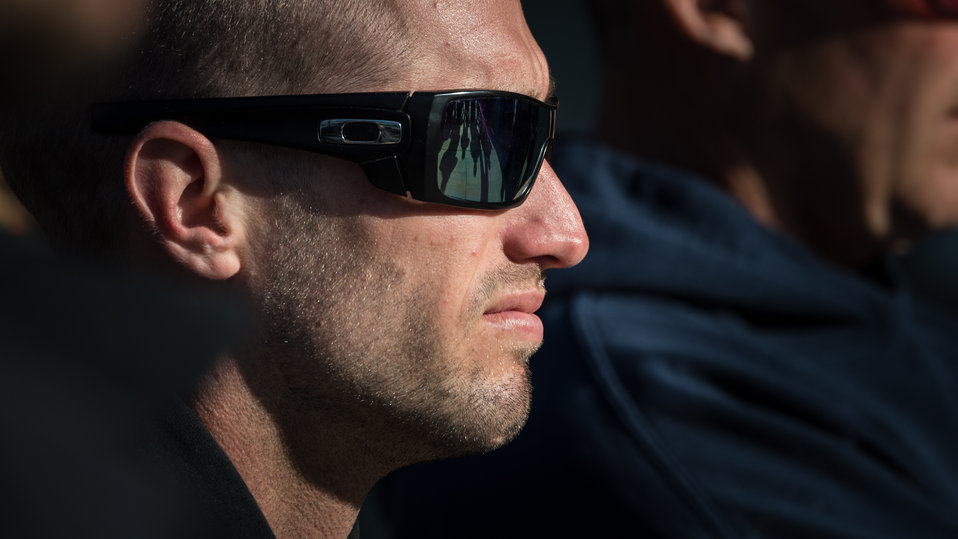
Veteran wildland firefighter rappellers listen closely to the morning safety briefing at the U.S. Department of Agriculture (USDA) U.S. Forest Service (USFS) National Helicopter Rappel Program’s Rappel Academy at Salmon Air Base in Salmon, ID on Wednesday, May 14, 2014. From May 12, 2014, 72 veteran rappellers from all over the nation, 30 support staff, and three helicopters with flight crews attend the training at Salmon Air Base. Participants will rappel into the Perreau Creek area. The annual training is delivered in accordance with the National Rappel Operations Guide; strengthen leadership, teamwork, and communications within the rappel community, and produces quality aerial delivered firefighters for use in fire and aviation operations. The USDA Forest Service National Helicopter Rappel Program’s primary mission is initial attack. Rappel crews may be utilized for large fire support, all hazard incident operations, and resource management objectives.